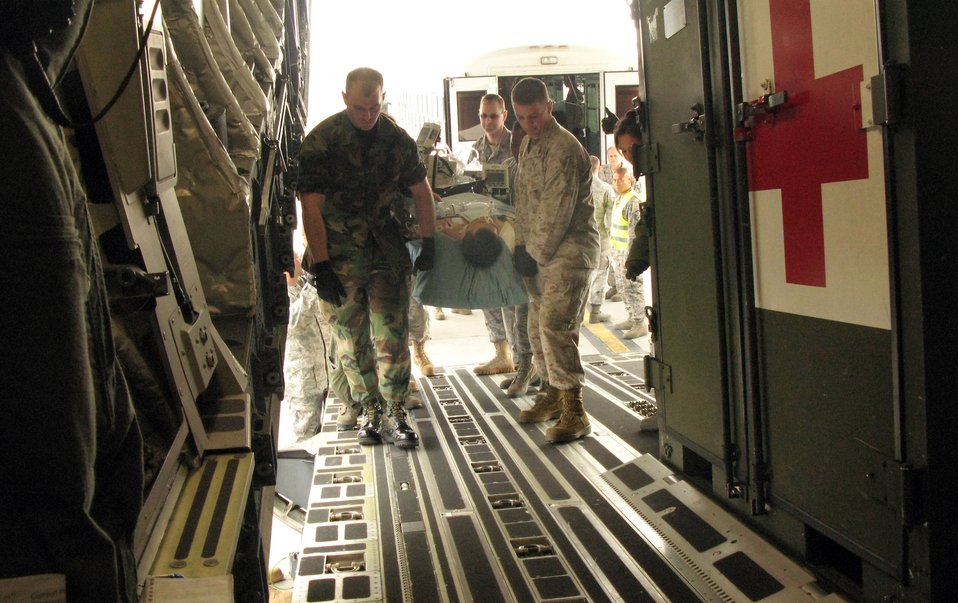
Air Force evacuation team carries wounded warriors home

An aeromedical evacuation crew carries wounded warriors aboard a C-17 Globemaster III aircraft at Ramstein Air Base, Germany, April 26, 2011, for a flight to Andrews Air Force Base, Md., to receive advanced-level care in the United States.